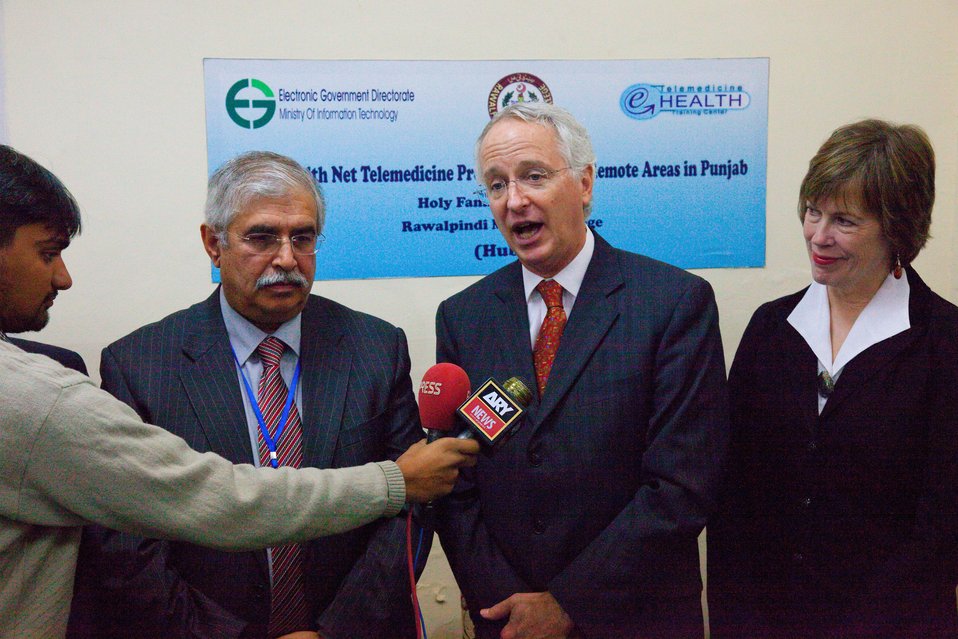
Telemedicine

Rawalpindi, January 5, 2012 – Ambassador Cameron Munter and his wife Dr. Marilyn Wyatt sitting with Dr. Asif Zafar Malik, Project Director Telemedicine/training and other officials.